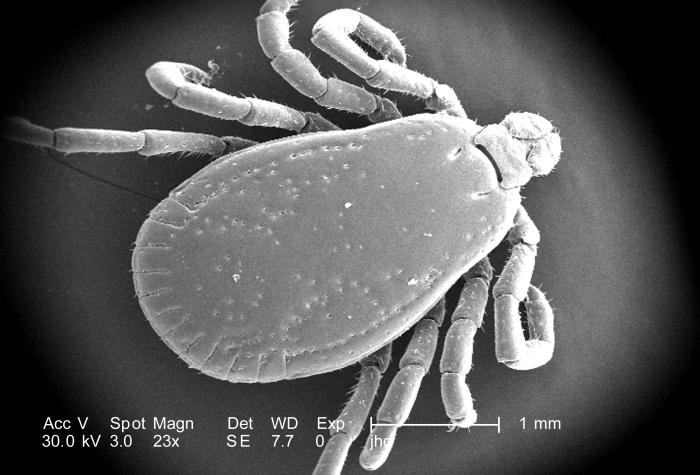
Under a low magnification of 23X, this scanning electron micrograph (SEM) depicted a dorsal view of an unidentified male Dermacentor sp. tick found upon a cat in the suburbs of Decatur, Georgia, which measured approximately 3.5mm from its gnathosoma (i.e., capitulum), which is where its mouthparts are located, to the distal abdominal margin. Note that the entire dorsum of this tick's abdomen is covered by its tough 'scutum', or 'shield', categorizing it as a male, whereas, in female Ixodid-species ticks, the scutum only partially covers the dorsal abdomen. The ridges running along the distal abdominal border are known as 'festoons'.